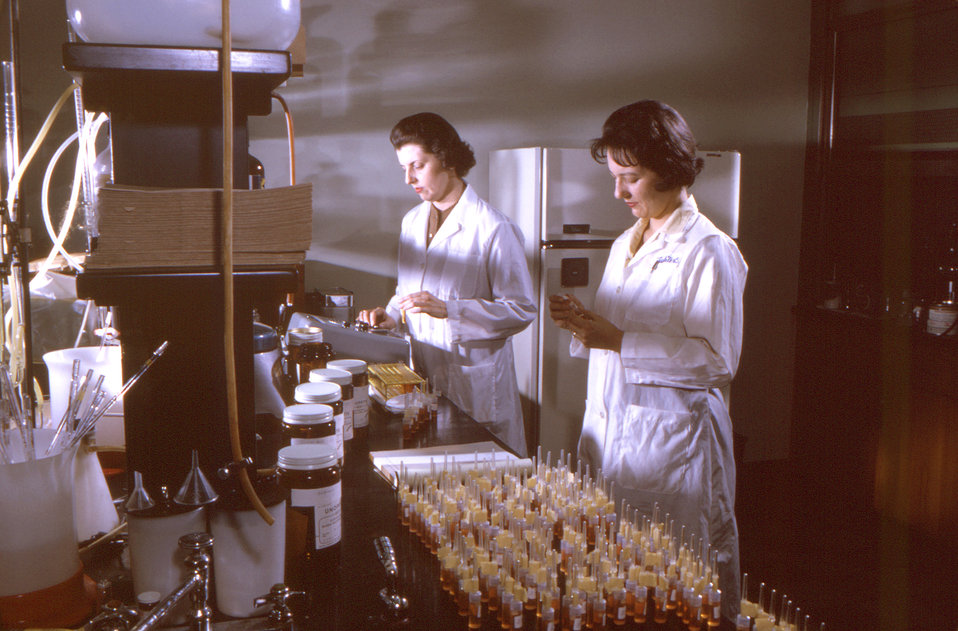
This historic 1965 photograph depicted two laboratory technicians in the process of conducting a quantitative analysis upon collected donor capillary blood samples, for the presence of cyanmethemoglobin. See PHIL 12142 for a close-up image depicting the collection of the capillary blood, using a Unopette� disposable pipette.